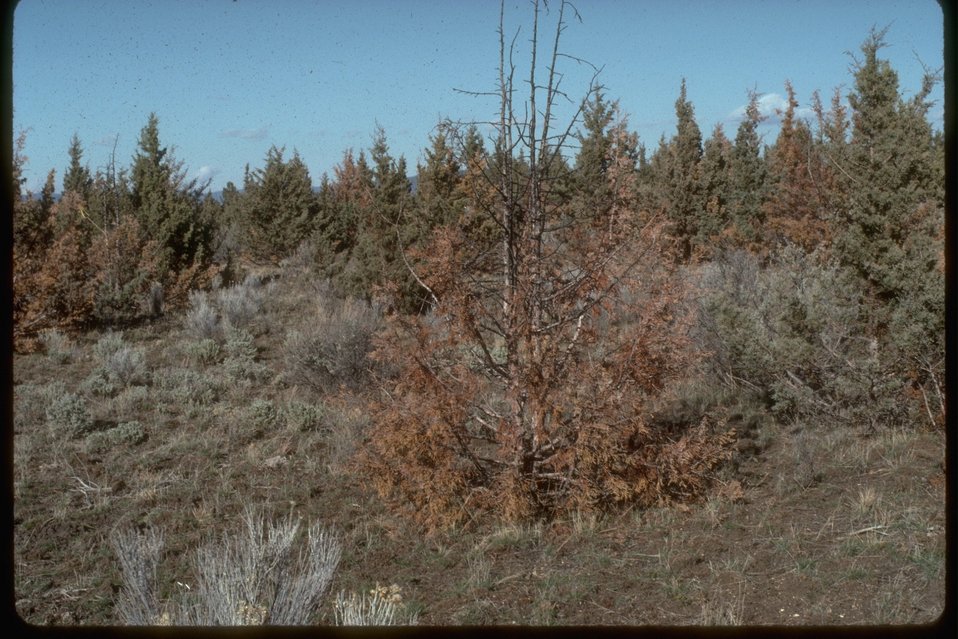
Results of Juniper burning on private land in central Oregon.